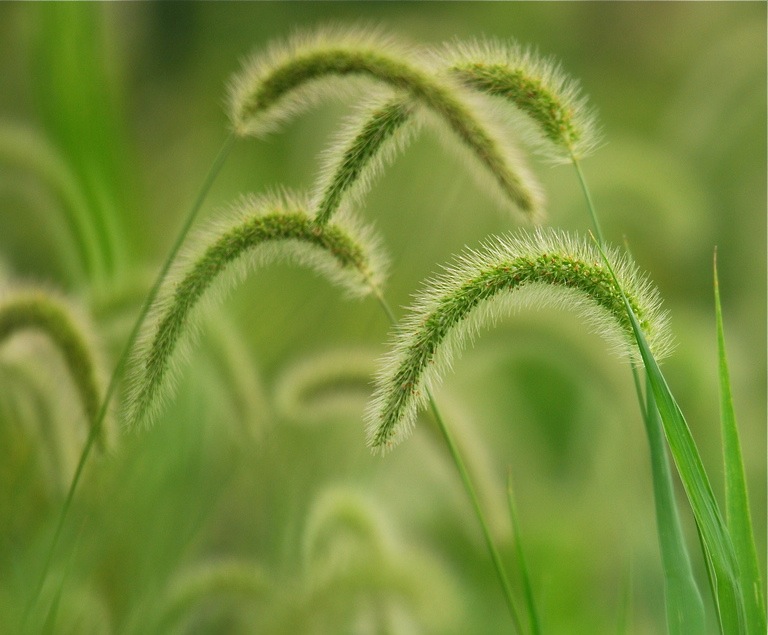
greens of summer

Edwin B. Forsythe National Wildlife Refuge, NJ